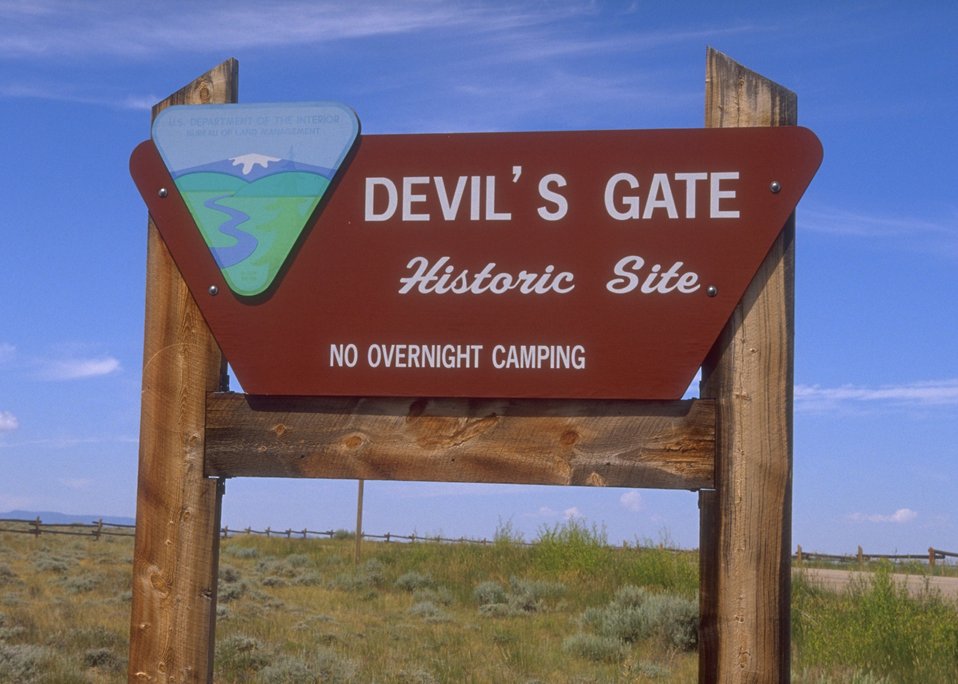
Devil's Gate BLM interpretive site along the Oregon & Mormon Trail, Rawlins Field Office